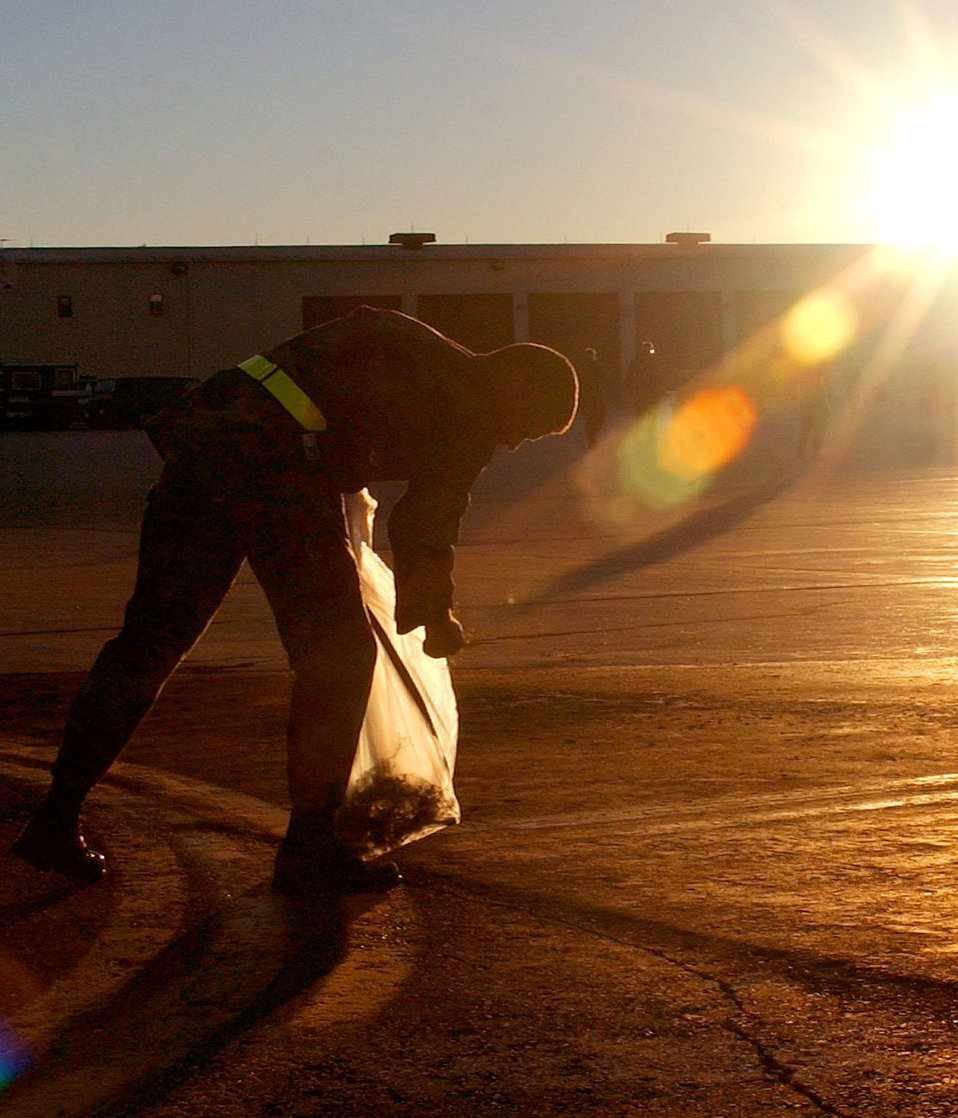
Mr. Clean

ELLSWORTH AIR FORCE BASE, S.D. -- A member of the 28th Mission Support Group helps clean the flightline of foreign objects that could damage aircraft.